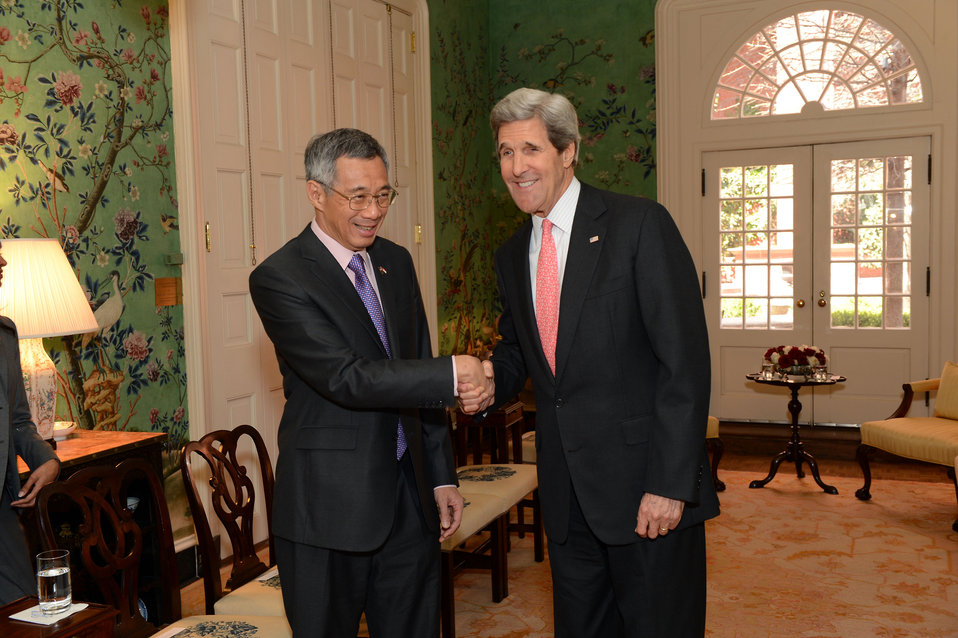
Secretary Kerry Meets With Singaporean Prime Minister Lee Hsien Loong

U.S. Secretary of State John Kerry meets with Singaporean Prime Minister Lee Hsien Loong at the Blair House in Washington, D.C., on April 3, 2013.